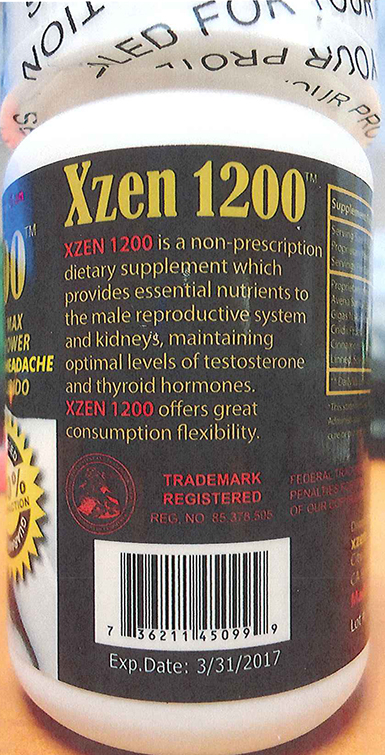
RECALLED – Dietary Supplement

April 1, 2014 – Product Recall – Nova Products, Inc. Issues Voluntary Nationwide Recall of Dietary Supplements with Undeclared Active Pharmaceutical Ingredients.